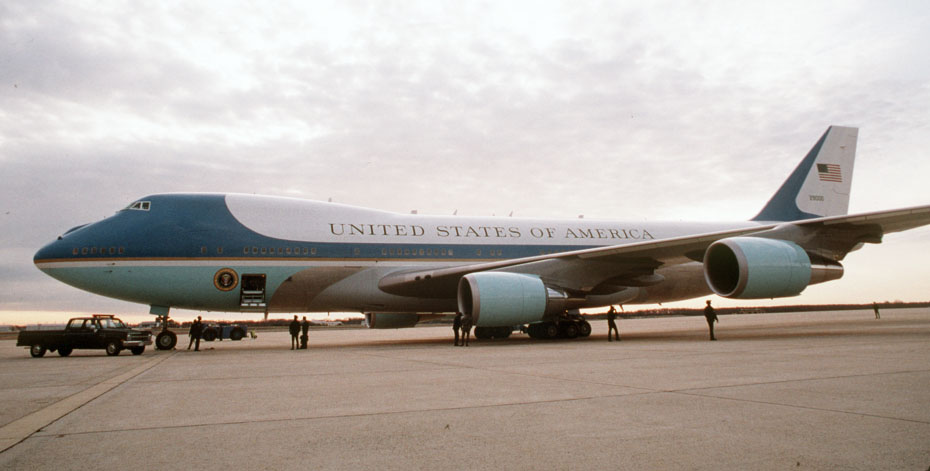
VC-25A

FILE PHOTO -- Principal differences between the VC-25A and the standard Boeing 747, other than the number of passengers carried, are the electronic and communications equipment aboard Air Force One, its interior configuration and furnishings, self-contained baggage loader, front and aft air-stairs, and the capability for in-flight refueling. These aircraft are flown by the presidential aircrew, maintained by the presidential maintenance branch, and are assigned to Air Mobility Command's 89th Airlift Wing, Andrews Air Force Base, Md.